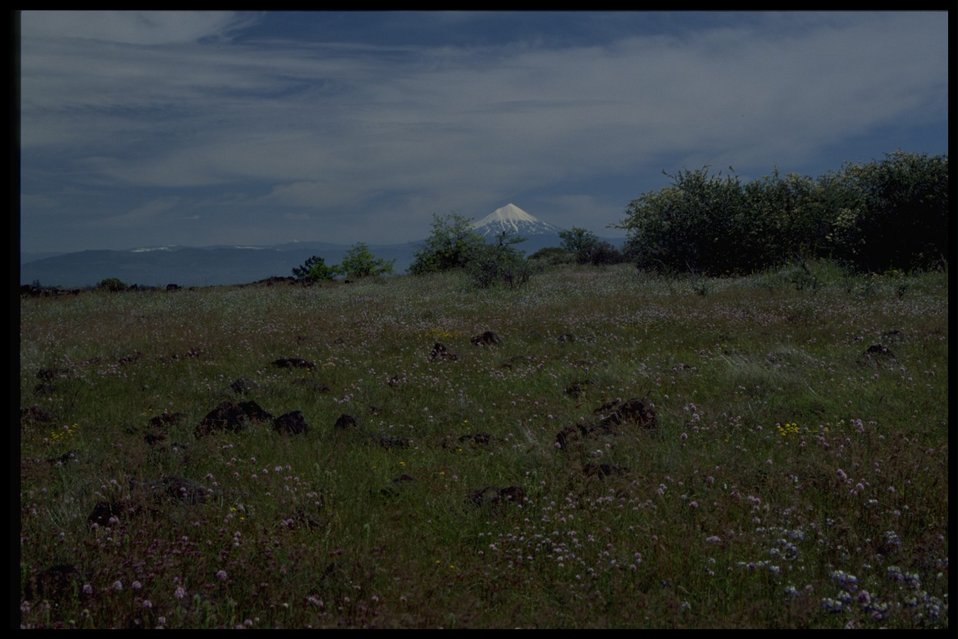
Rocky meadow with view of Mt. McLoughlin in backbround. Wildflowers in foreground: Plectris congesta, Collinsia grandiflora, Ceanothus cunetatus, Lasthenia californica.